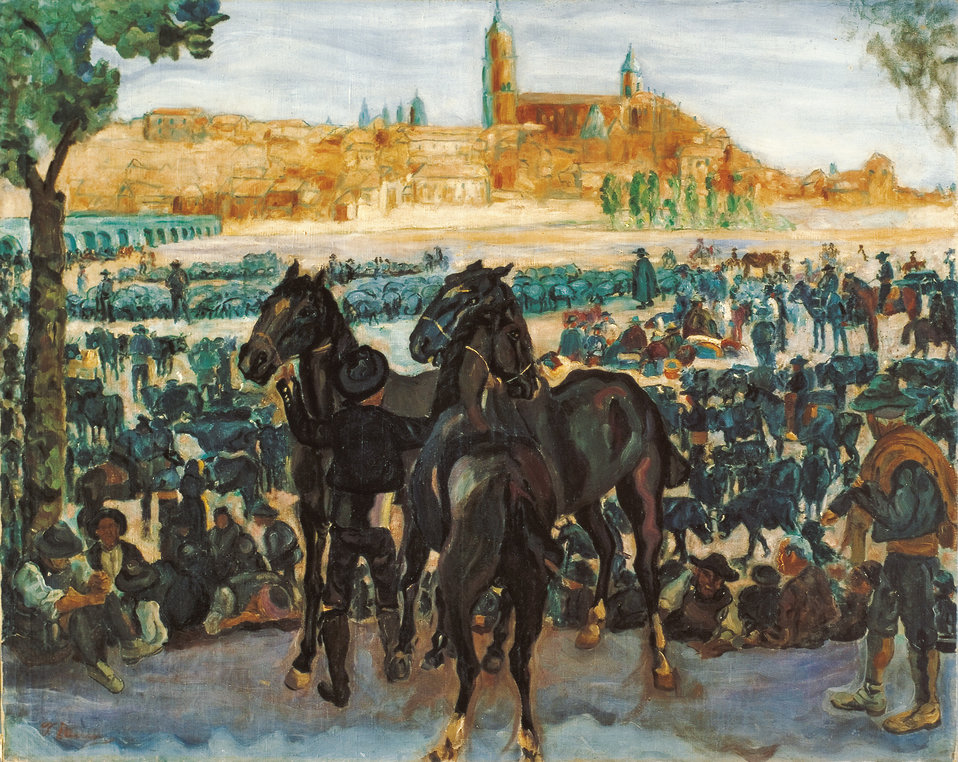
Cattle Fair in Salamanca Oil on canvas, 95 x 120 cm, Inv. CTB.2009.6 Museo Carmen Thyssen Native name Museo Carmen Thyssen Location Málaga, Spain Coordinates 36° 43′ 17″ N, 4° 25′ 22″ W Established 2011 Website www.carmenthyssenmalaga.org